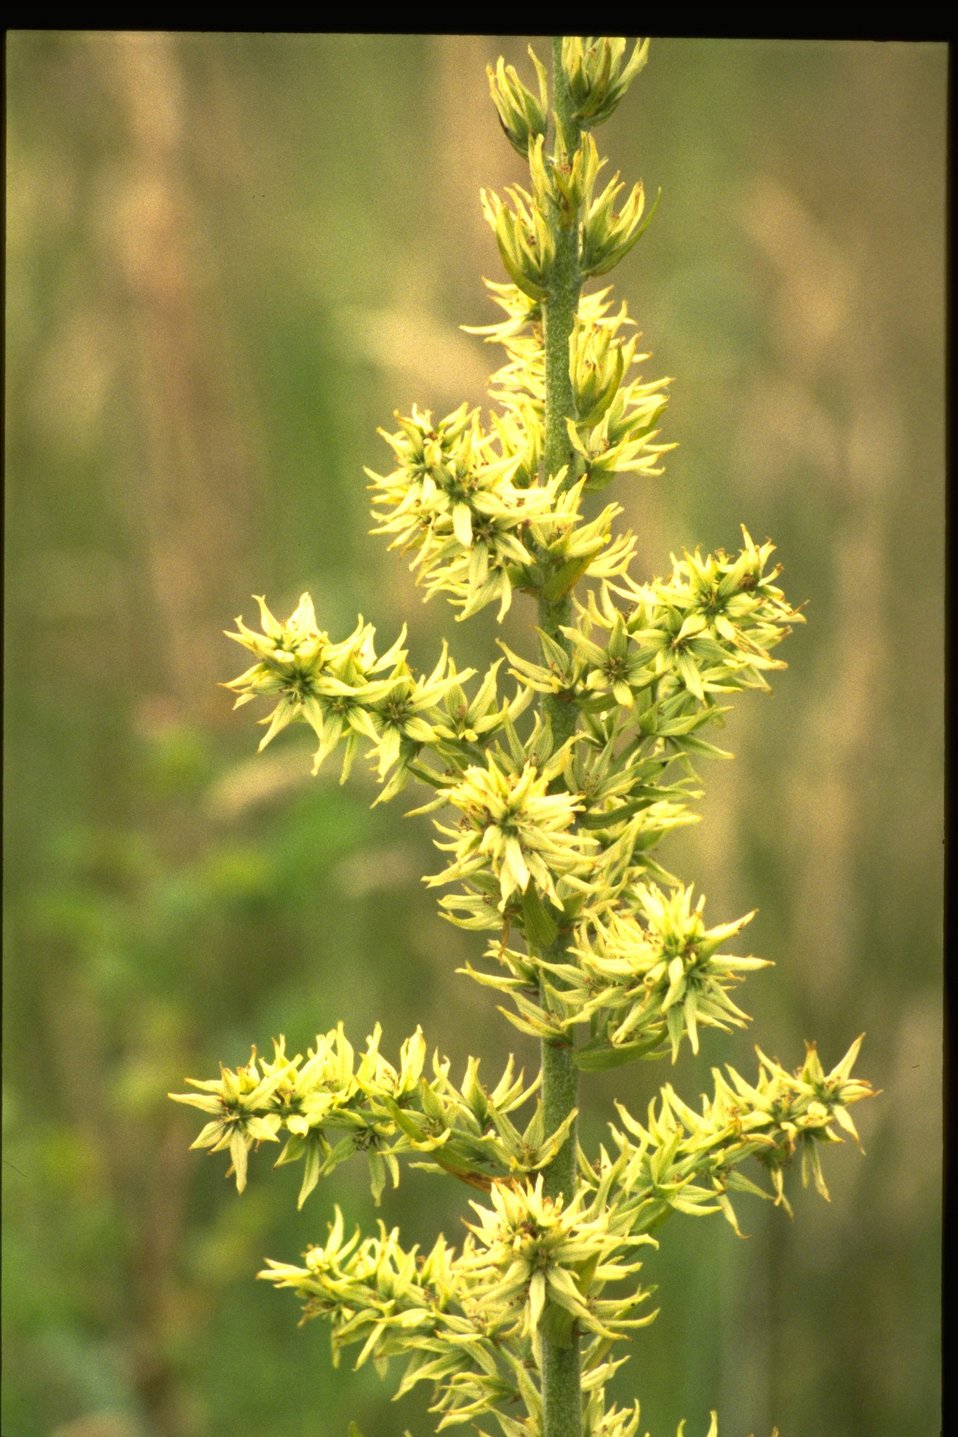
Medium shot of Veratrum viride.